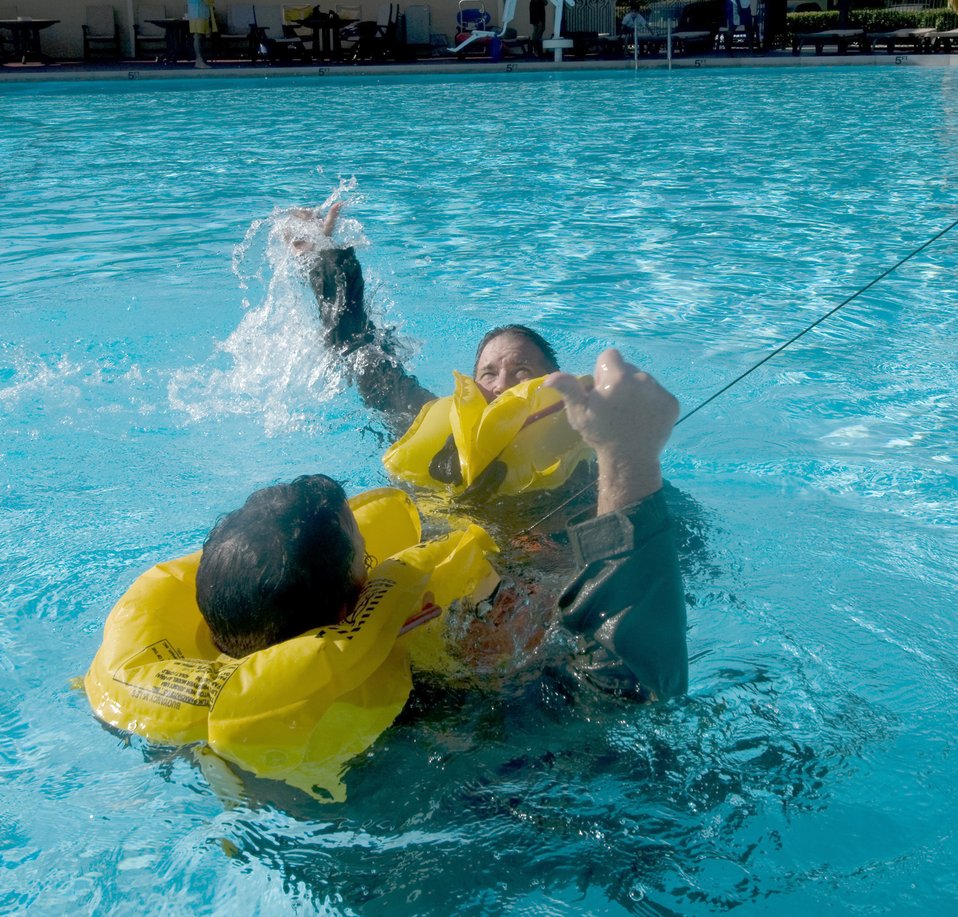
Water survival skills

Maj. Mike Cranston signals for helicopter